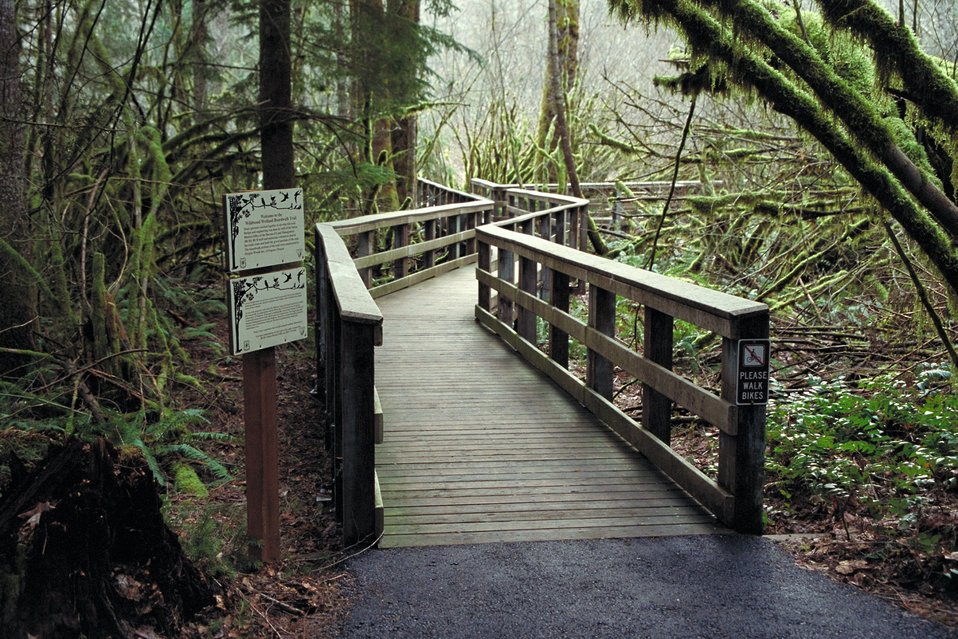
Cascade Stream Watch is an environmental education program conducted at BLM's Wildwood Recreation site.